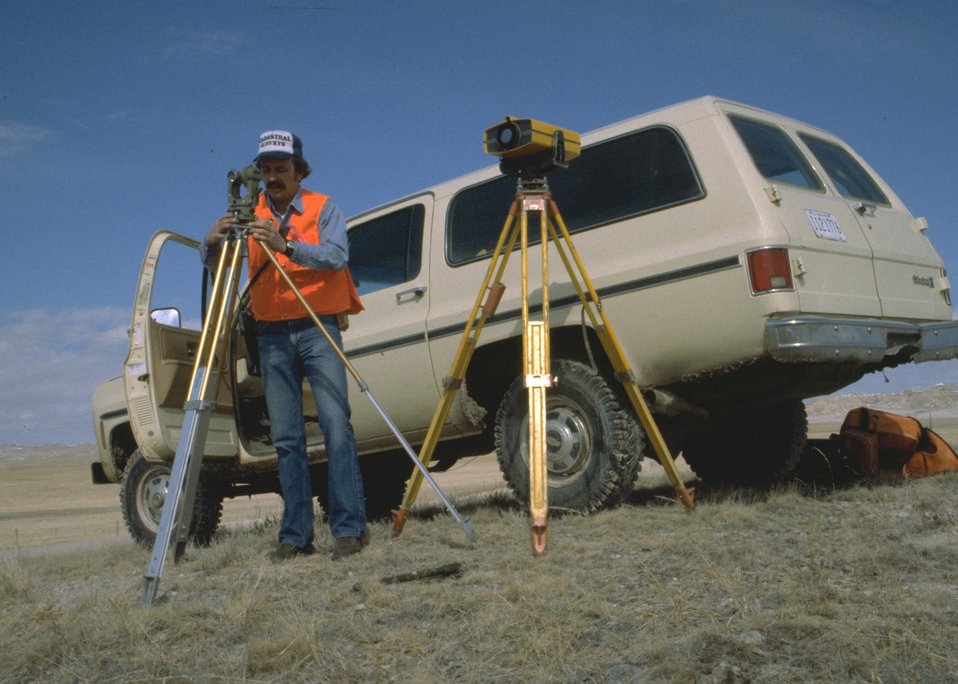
Surveying an unknown area.